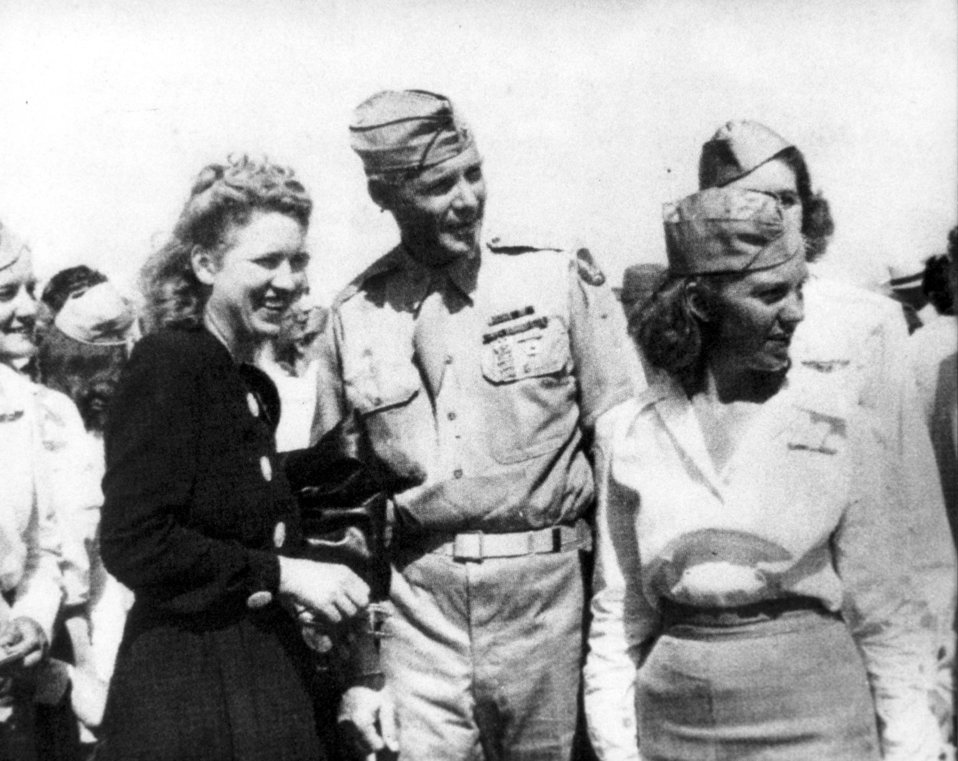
Women take off in flight

SWEETWATER, Texas -- World-class aviator Jackie Cochran (left) with her adjutant officer (center) is surrounded by pilot trainees at a training field near here.